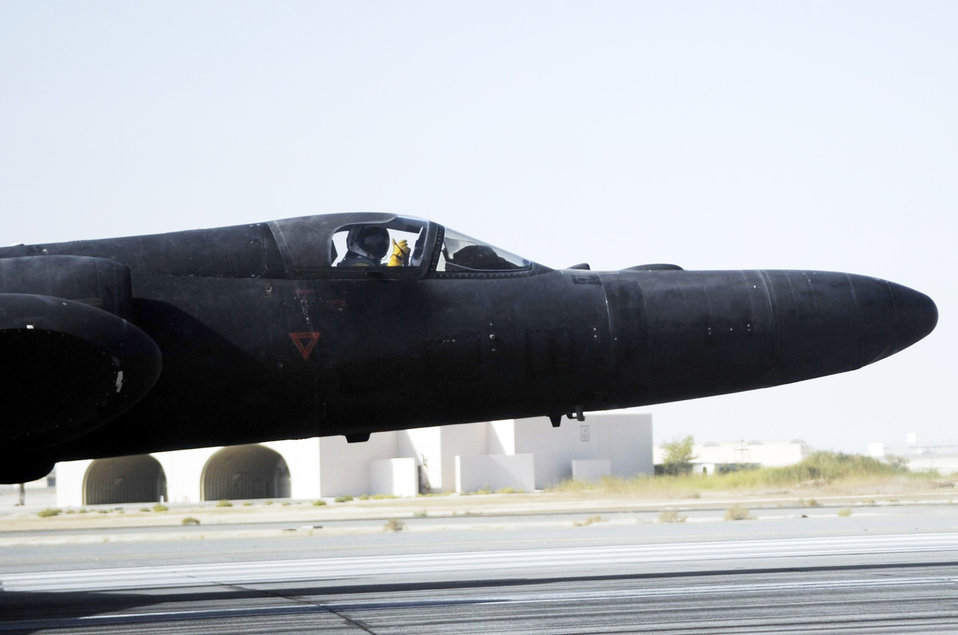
Airmen provide intelligence, surveillance, reconnaissance

Capt. Peter J. Gryn signals that all systems are good from his U-2 Oct. 4, 2009, prior to his first combat mission. He's deployed from Beale Air Force Base, Calif.